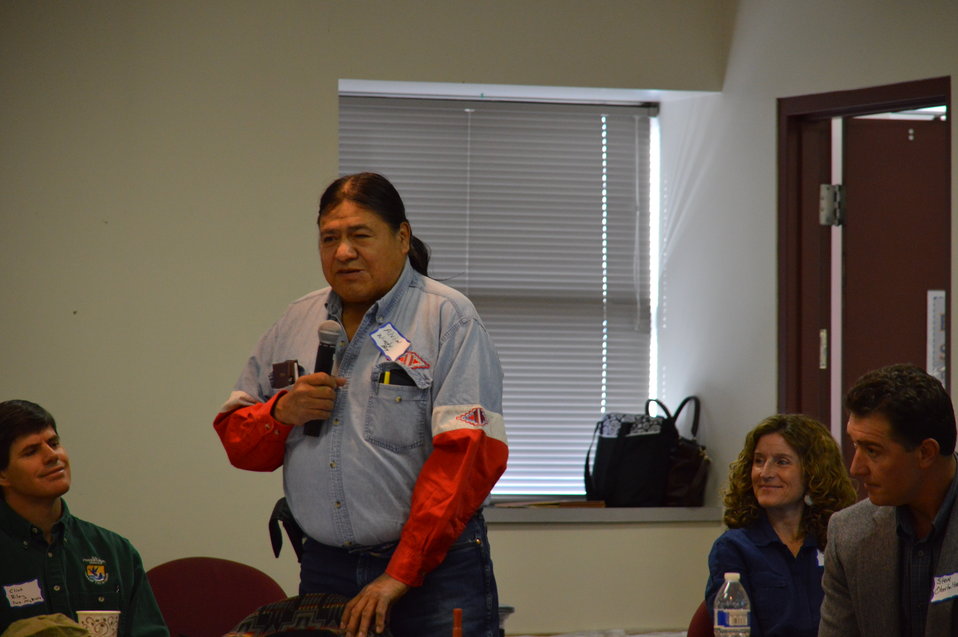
Alvin Windy Boy's opening remarks at the Eagle Summit III in Denver, Colorado on March 20, 2014 at the Rocky Mountain Arsenal National Wildlife Refuge.